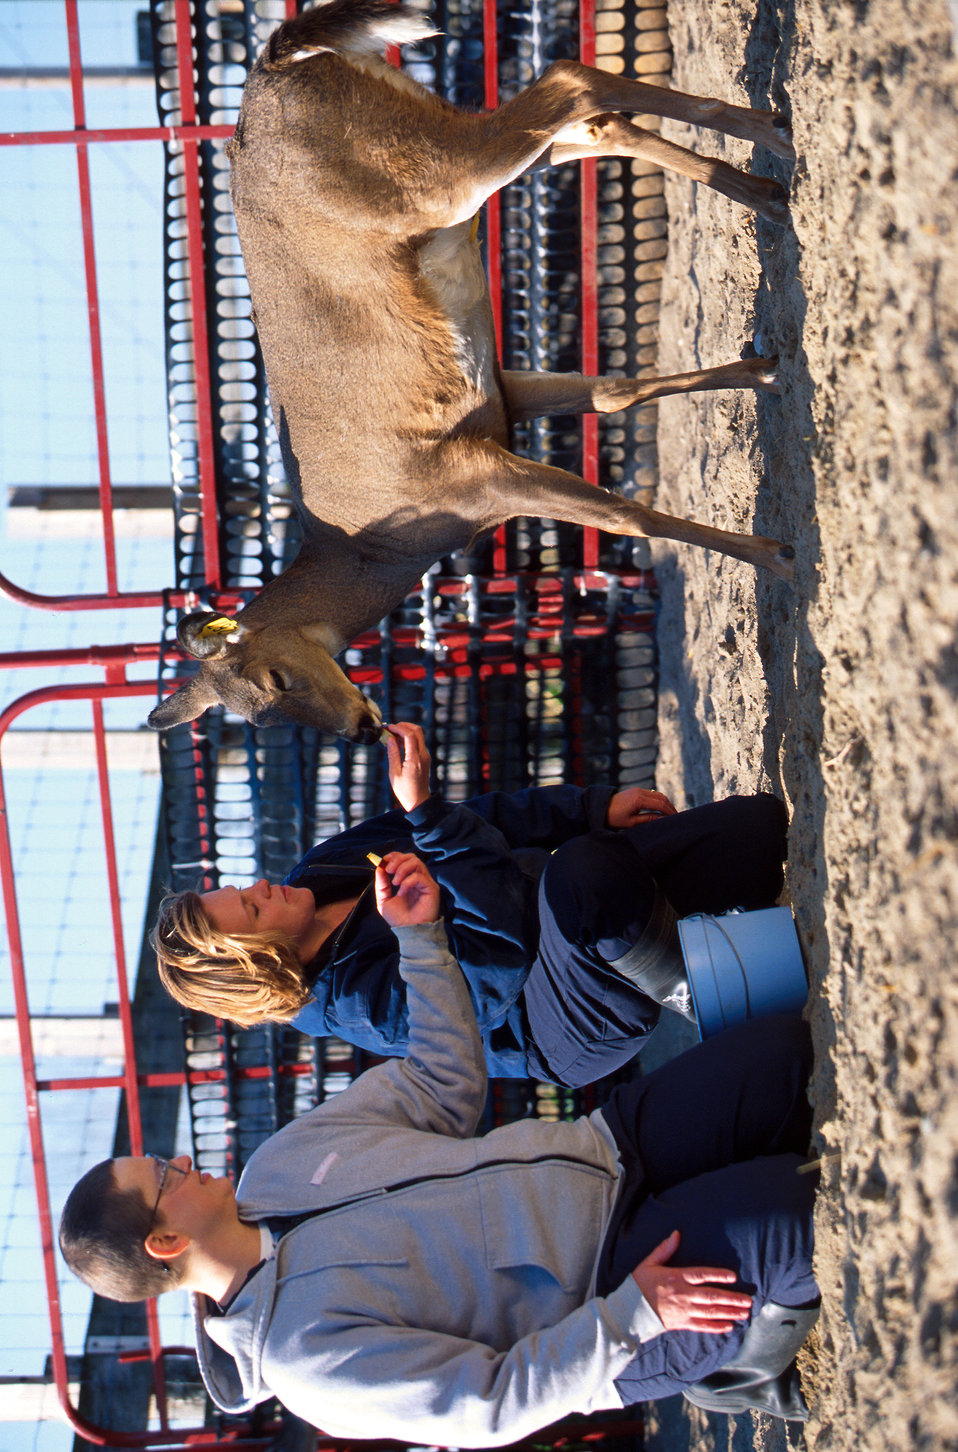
U.S. Department of Agriculture (USDA) Agricultural Research Service (ARS) microbiologist Diana Whipple and animal caretaker Katy Lies offer treats to a white-tailed deer being used to study tuberculosis in its wild counterparts.